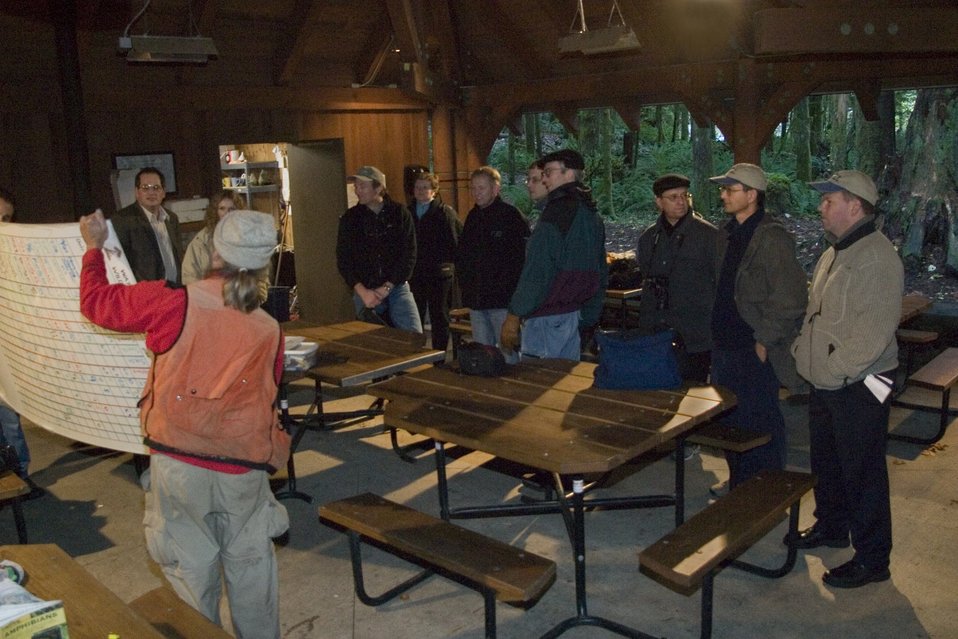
The Wild Samon Center tour group visit the Salmon Creek Shelter and get a briefing on work just completed by Reynolds Natural Resource Academy 12th and 11th grader environmental education students.